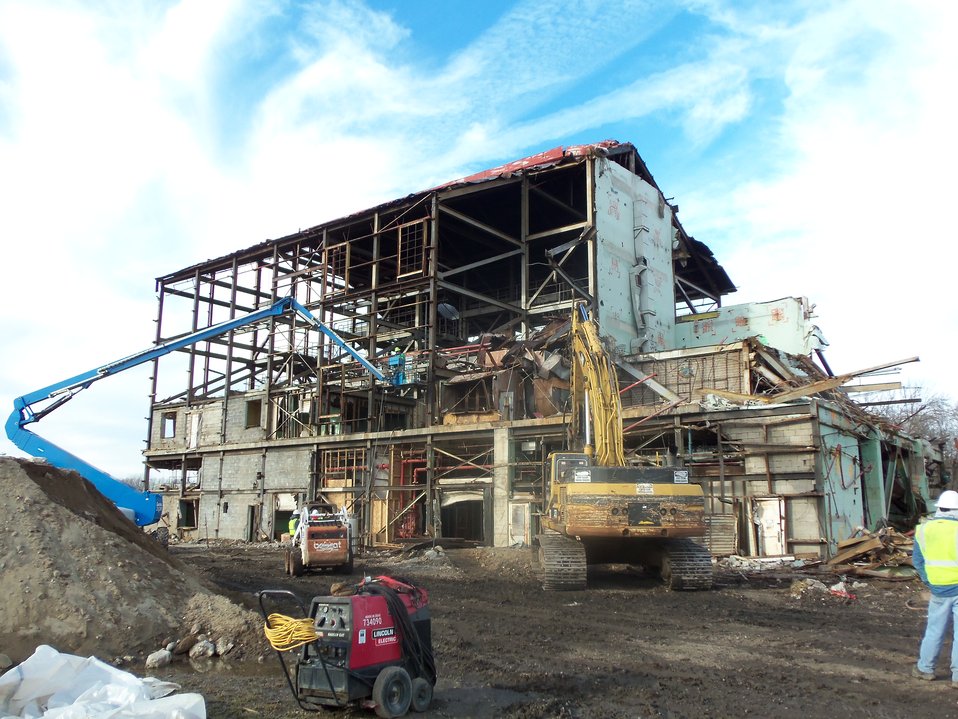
Building 401 shell deconstruction.
Activities from the Niagara Falls Storage Site, which is associated with the former Lake Ontario Ordnance Works. Formerly Utilized Sites Remedial Action Program (FUSRAP), a program initiated in 1974 to identify, investigate and clean up or control sites that were part of the Nation's early atomic energy and weapons program. Activities at the sites that are eligible for FUSRAP were conducted by Manhattan Engineer District (MED) or the Atomic Energy Commission (AEC), both predecessors of the Department of Energy (DOE). The U.S. Army Corps of Engineers was assigned management of FUSRAP by Congress in 1997.